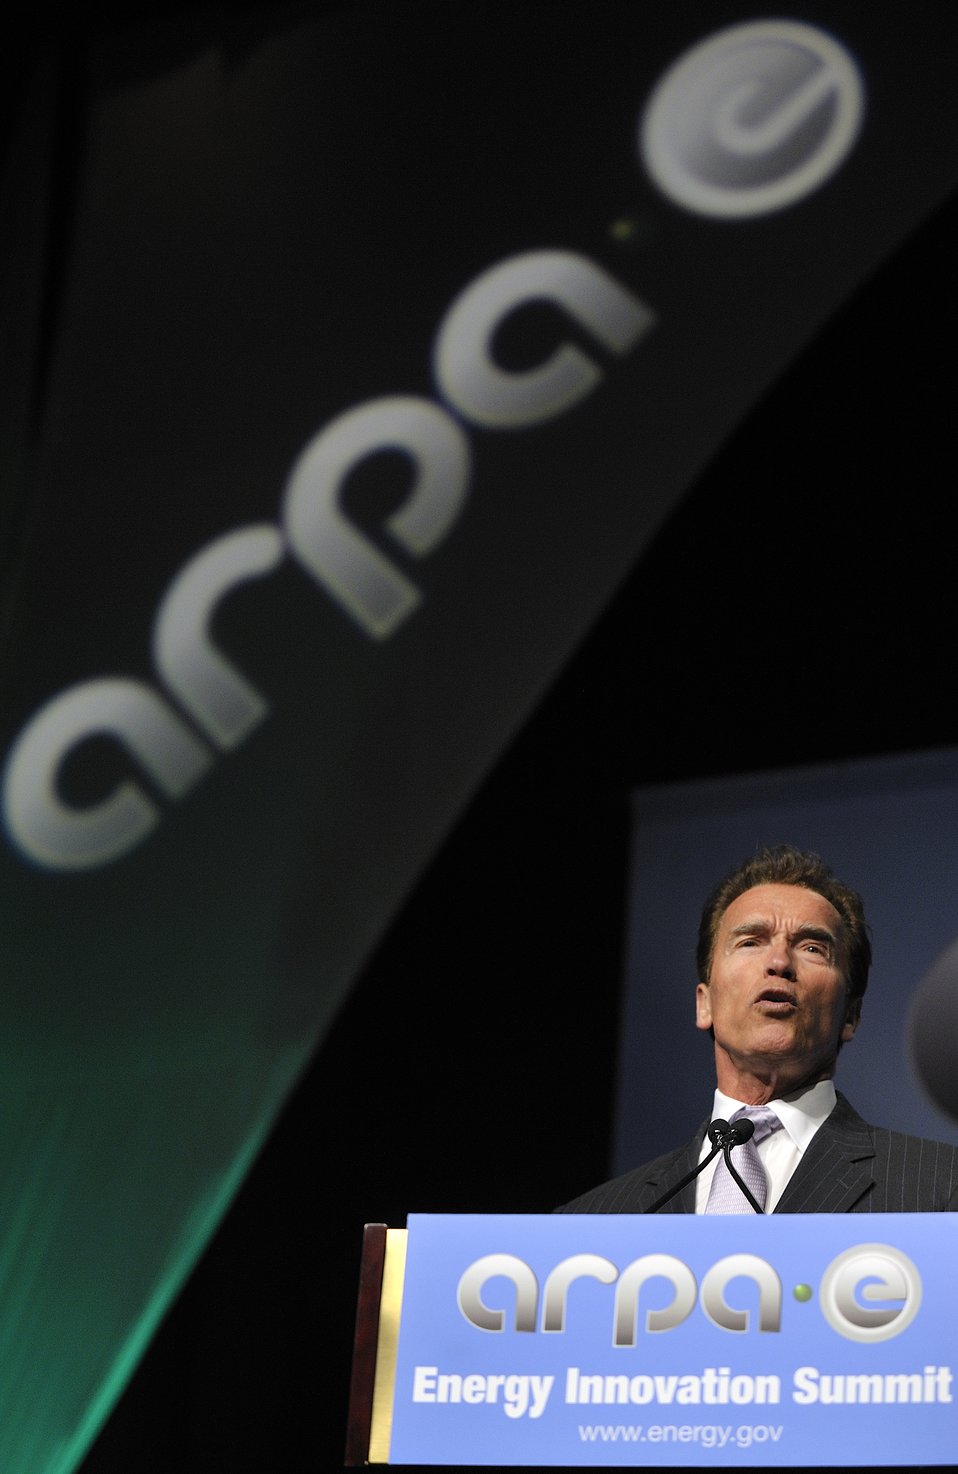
ARPA-E Energy Innovation Summit 2011, 19 of 83

Arnold Schwarzenegger, Former Governor of California.